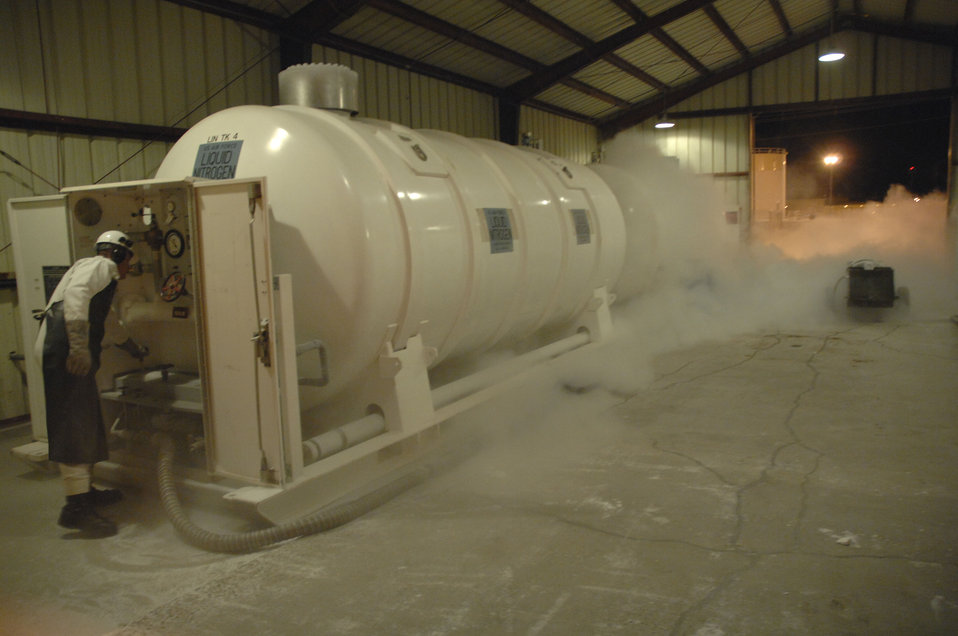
Cyrogenics is a cold business

Airman 1st Class Andrew Tuttle purges the discharge tube on a liquid nitrogen tank Dec. 20 to clear any impurities that may have settled since its last use. The plume is the result of burnoff and the extremely low boiling point of liquid nitrogen. Airman Tuttle is assigned to the 354th Logistics Readiness Squadron at Eielson Air Force Base, Alaska.